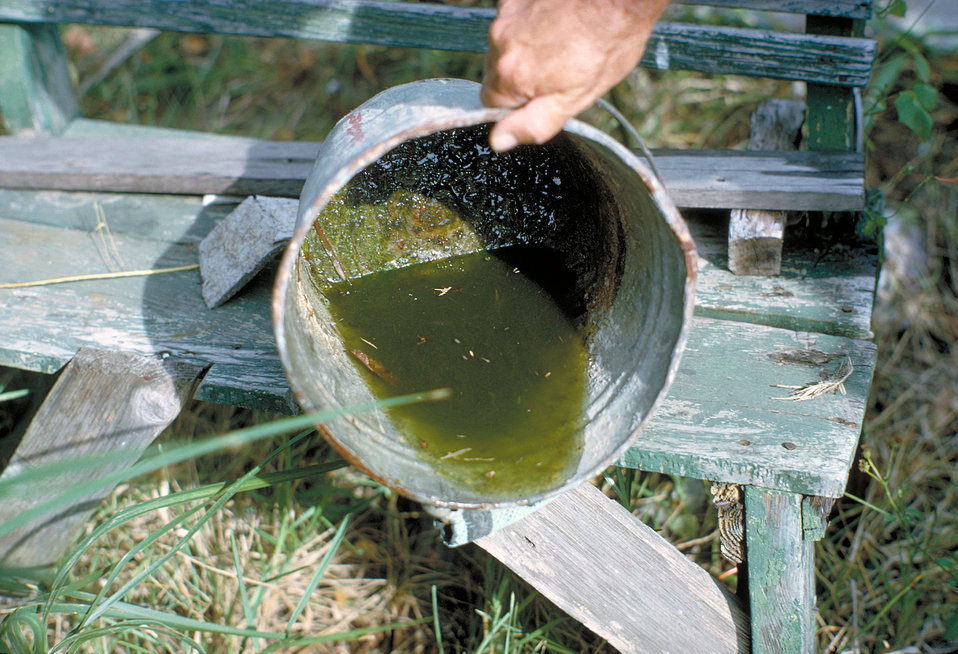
Aedes aegypti mosquito breeding site.